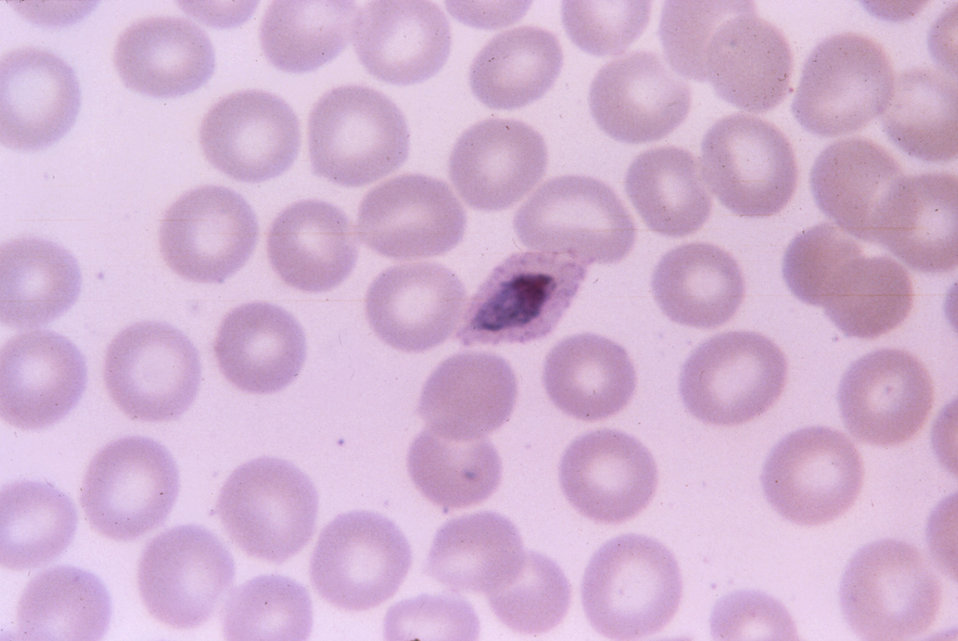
This photomicrograph shows a growing Plasmodium ovale trophozoite within an oval RBC.